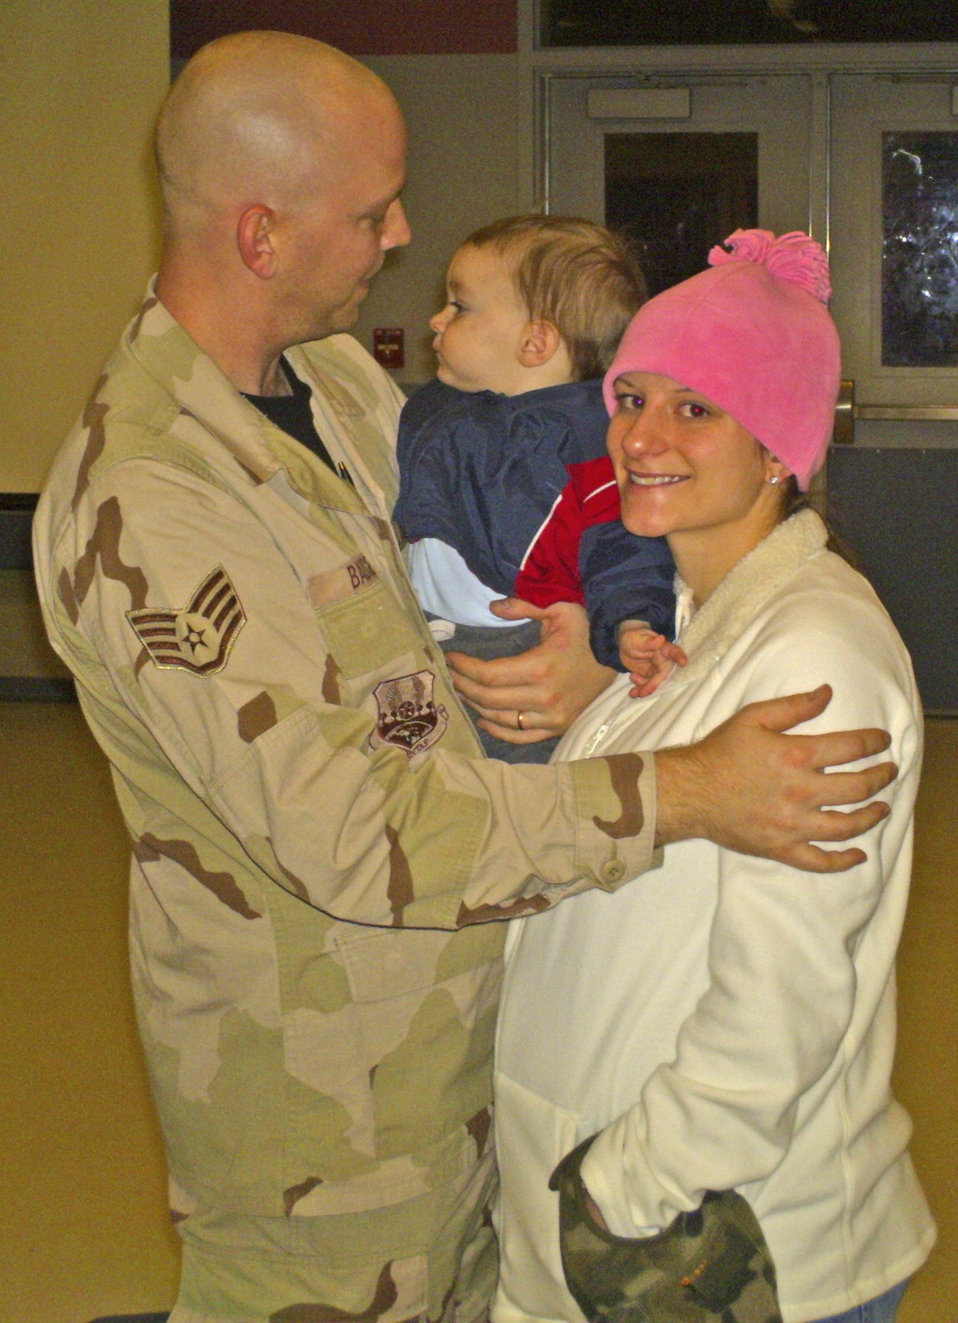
Eielson Airmen return from deployment

After more than 36 hours on a chartered flight, Staff Sgt. Thomas Badgero is greeted by wife, Rose, and son, Hunter, Jan. 23 at the Joint Mobility Complex at Eielson Air Force Base, Alaska. Sergeant Badgero is assigned to the 354th Logistics Readiness Squadron.